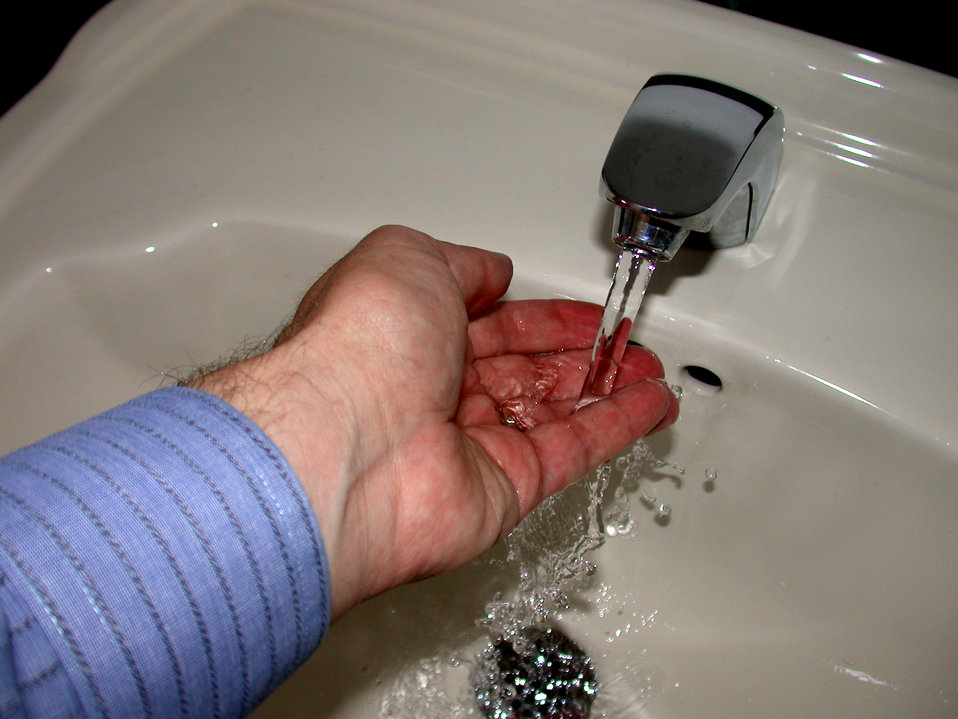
This 2001 image depicted a man's hand he'd placed in a stream of running water pouring from an automatically activated faucet. The water flow had been activated by a built-in motion detector so that the user only had to place his hands beneath the faucet. No pressing, turning, pushing, or twisting was required. Such a mechanism is particularly useful for those with limited reach or grasp, or for those to whom hygiene is important. The downside of such a device involves the lack of a way one can control the magnitude of the flow rate, or temperature, as well as the absence of universal directives that would guide an uninitiated user as to how to use the mechanism.